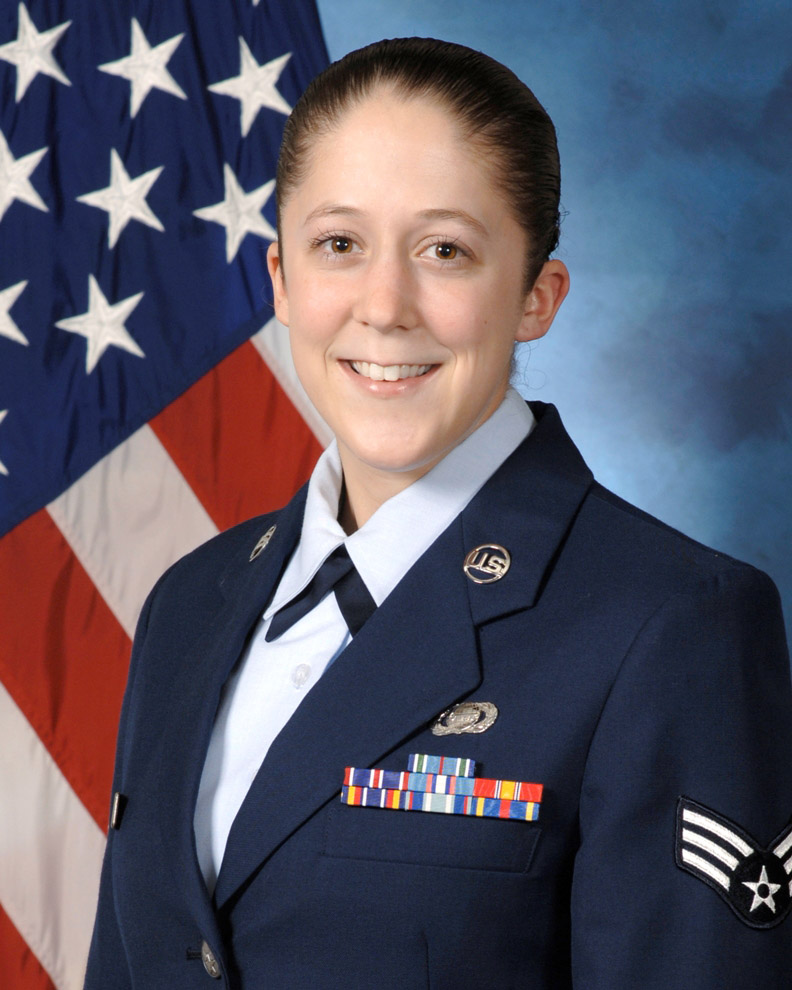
Air Force officials honor 12 Outstanding Airmen of the Year

Senior Airman Mary Bullock from Hurlburt Field, Fla., is one of the 12 Outstanding Airmen for 2008.